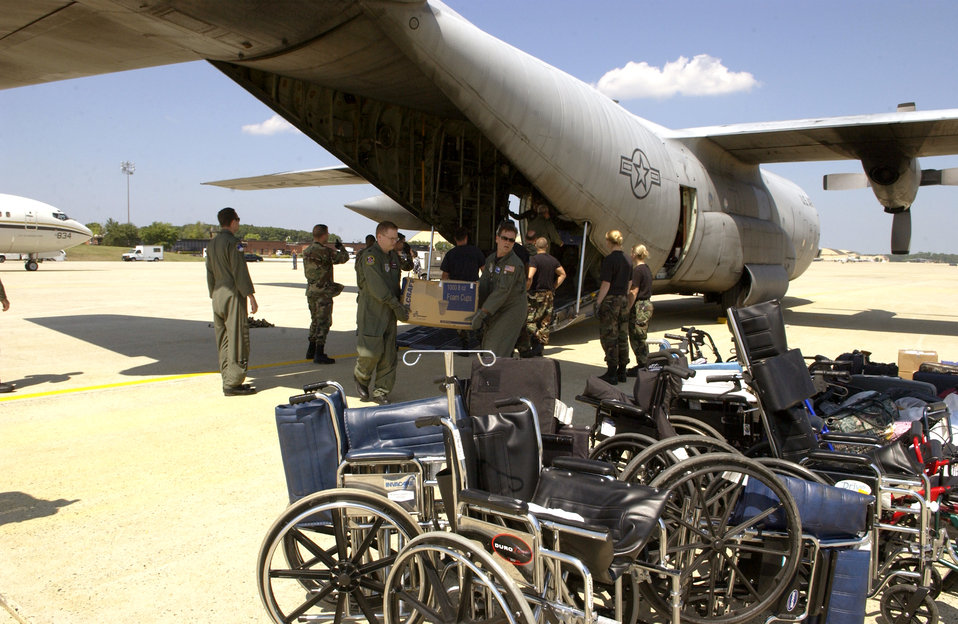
Cargo hauler

ANDREWS AIR FORCE BASE, Md. - Wheelchairs were among the cargo moved by Airmen with the 908th Airlift Wing at Maxwell Air Force Base, Ala., the 375th Aeromedical Evacuation Squadron at Scott AFB, Ill., and the 89th Medical Group who helped transport veterans from the Armed Forces Home in Gulfport, Miss., after Hurricane Katrina decimated the area. The veterans were flown by a C-130 Hercules from Maxwell to here and then taken to the Armed Forces Home in Washington, D.C.